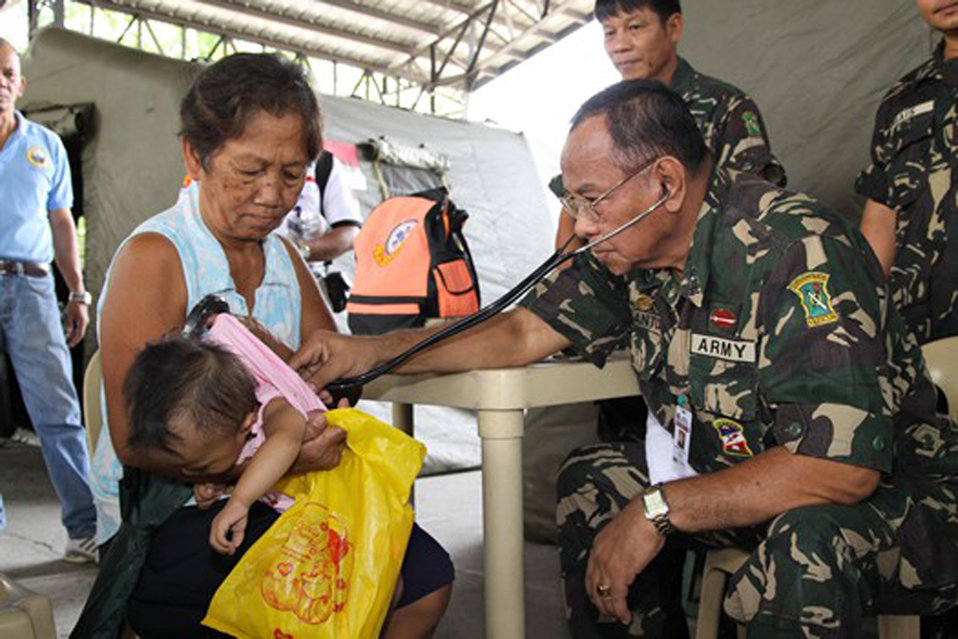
Multinational medical assistance aids Filipino community

A medic checks the pulse of a Filipino infant patient May 4 during the 2009 Association of Southeast Asian Nations Regional Forum Voluntary Demonstration of Response on Disaster Relief at Sapang Bato, Philippines. Civilian and military medical professionals from the United States, Japan, Australia, Indonesia and Papua-New Guinea are in the Philippines to provide medical care in areas in need.